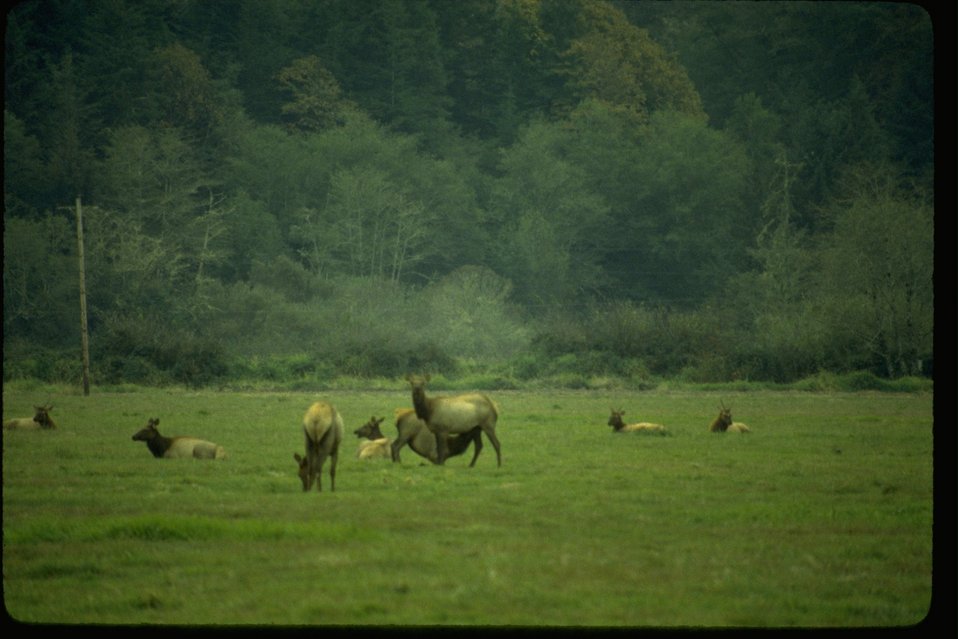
Elk in meadow at Dean Creek.